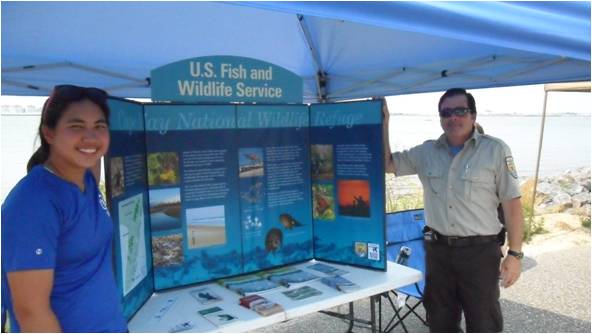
Public outreach and education at a community fair

U.S. Fish and Wildlife Service